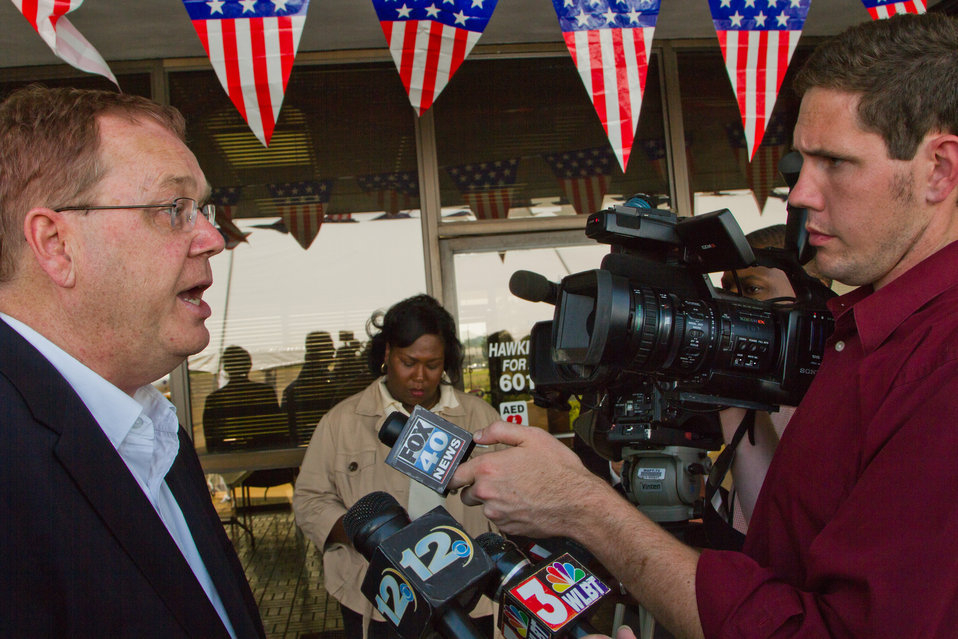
Agriculture Undersecretary for Rural Development Dallas Tonsager (left) was interviewed by news media at Hawkins Field in Jackson, MS, shortly before boarding a Blackhawk helicopter for the third aerial flyovers to assess more of the Mississippi River’s flooding in Mississippi.